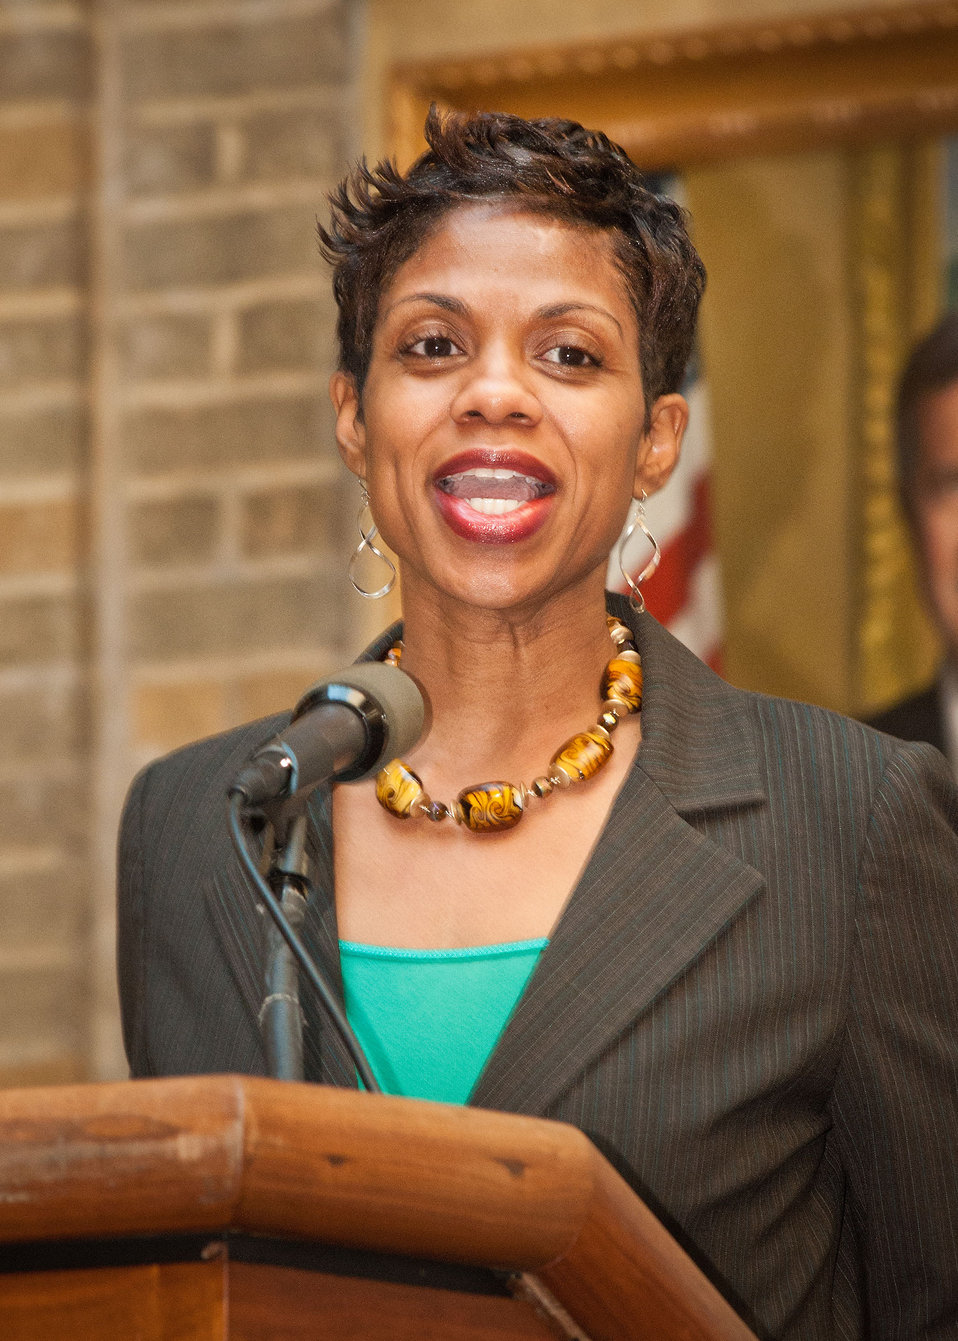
U.S. Department of Agriculture (USDA) Target Center Director D’Ann Clayton welcomes employees and guests to USDA’s Departmental Management (DM) Target Center 20th Anniversary at USDA in Washington, D.C. on Thursday, Sept 13, 2012. The USDA Target Center has provides Assistive Technology to employees with disabilities. The Center has assisted thousands of individuals with disabilities to further contribute to the mission of USDA. The Target Center has also partnered with the Department of Defense Computer/Electronic Accommodations Program (CAP).